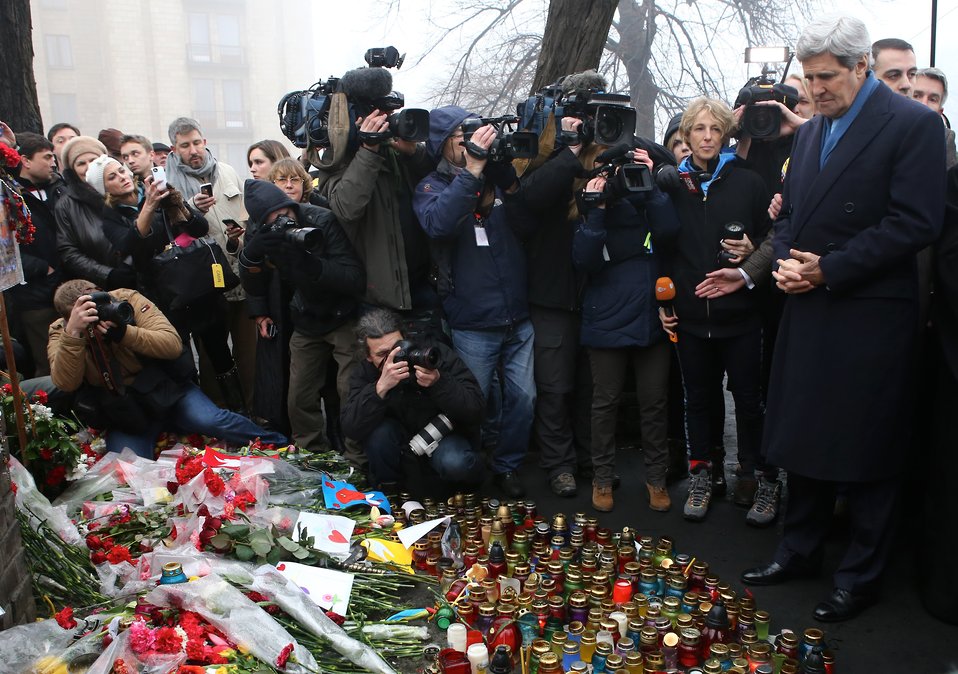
Secretary Kerry Visits the Shrine of the Fallen in Kyiv

U.S. Secretary of State John Kerry visits the Shrine of the Fallen in Kyiv, Ukraine, on March 4, 2014.